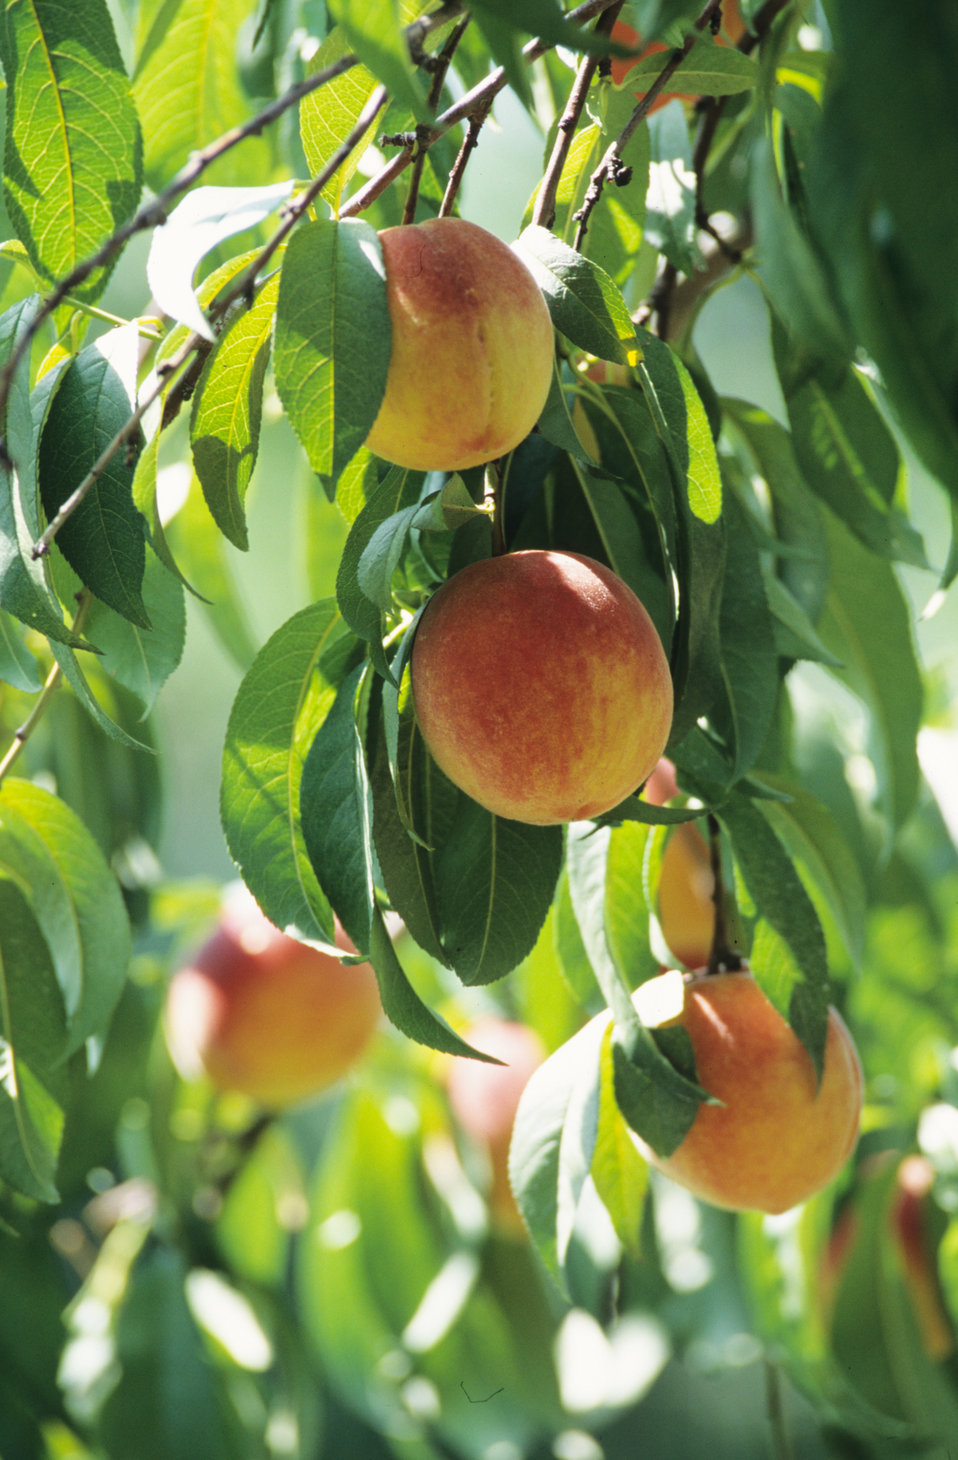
Peaches on the Williams Manor Peach Orchard in Morrisville, VA are ready for picking in mid August 1995.